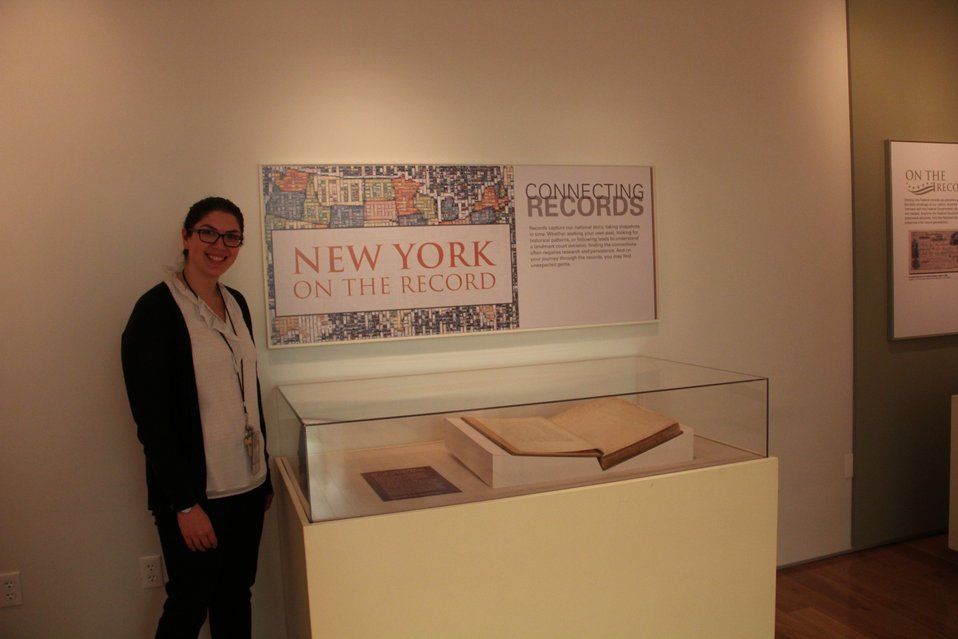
Sara Davis, our Education technican, stands next to the newest exhibit installation in the 'New York on the Record' gallery. Sara helped curate this exhibit highlighting the 225th anniversary of the U.S. Custom Service with a ledger that documents the earliest transactions in the port of NY, 1789.; Location: National Archives at New York City, New York, New York